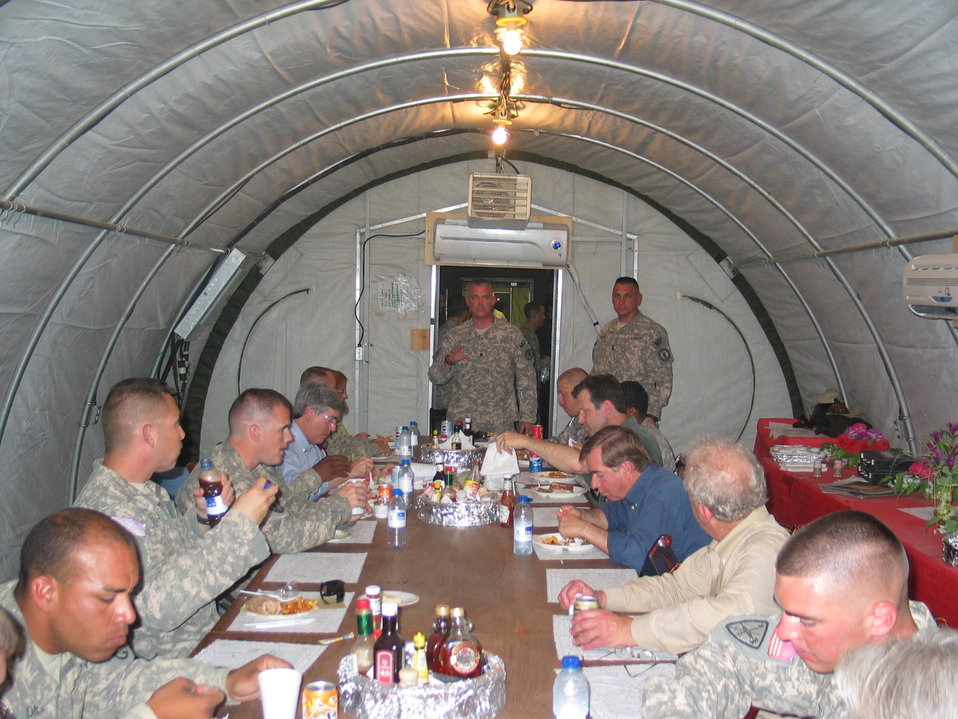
CODEL Berman